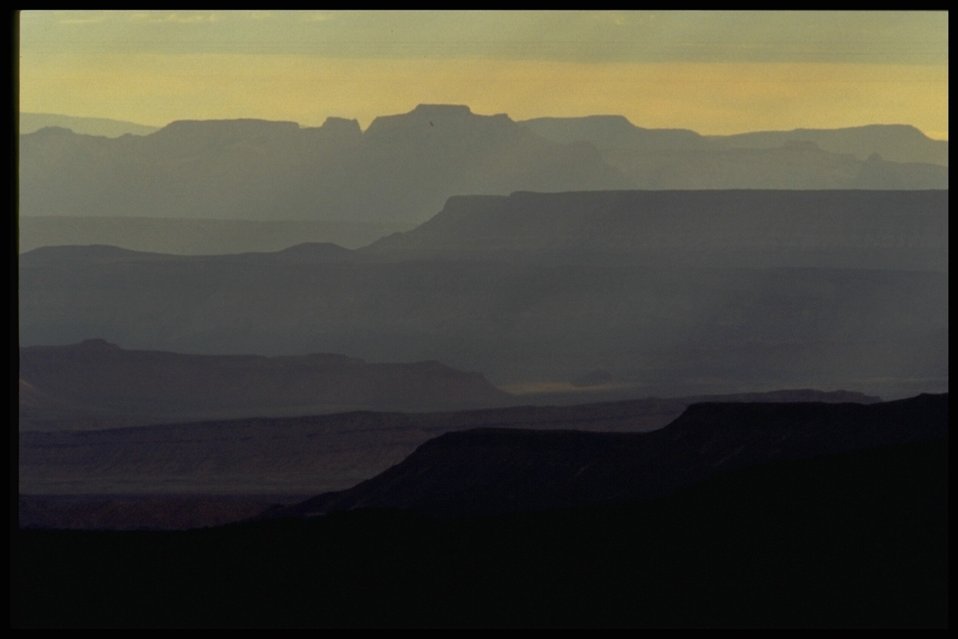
A nice mountian vew over the canyon of the Parashant Naitonal Monument.